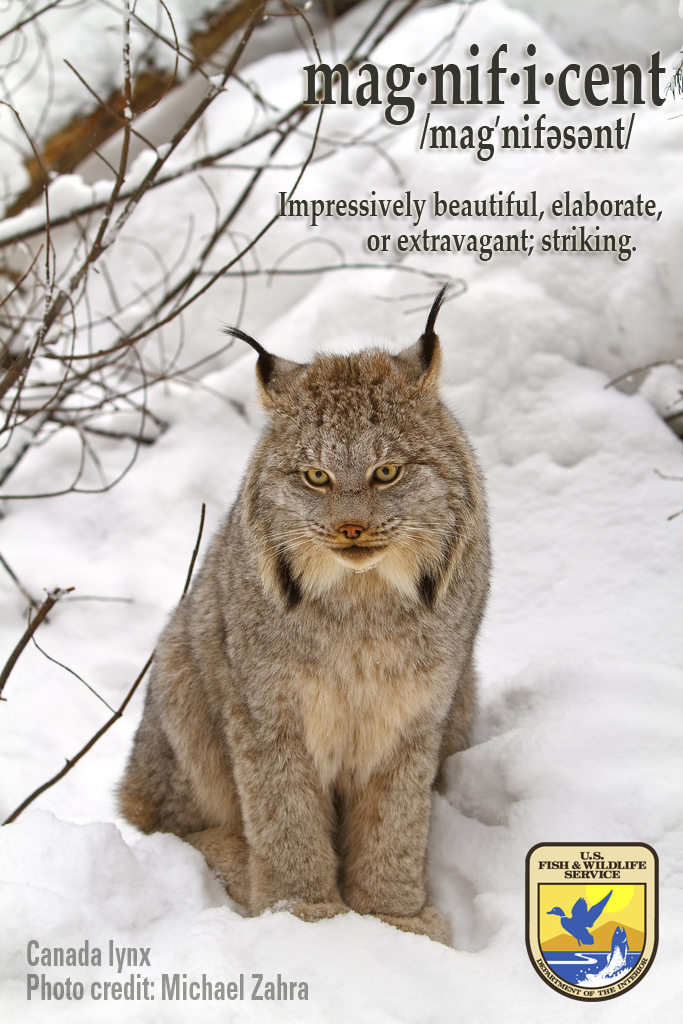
Canada lynx